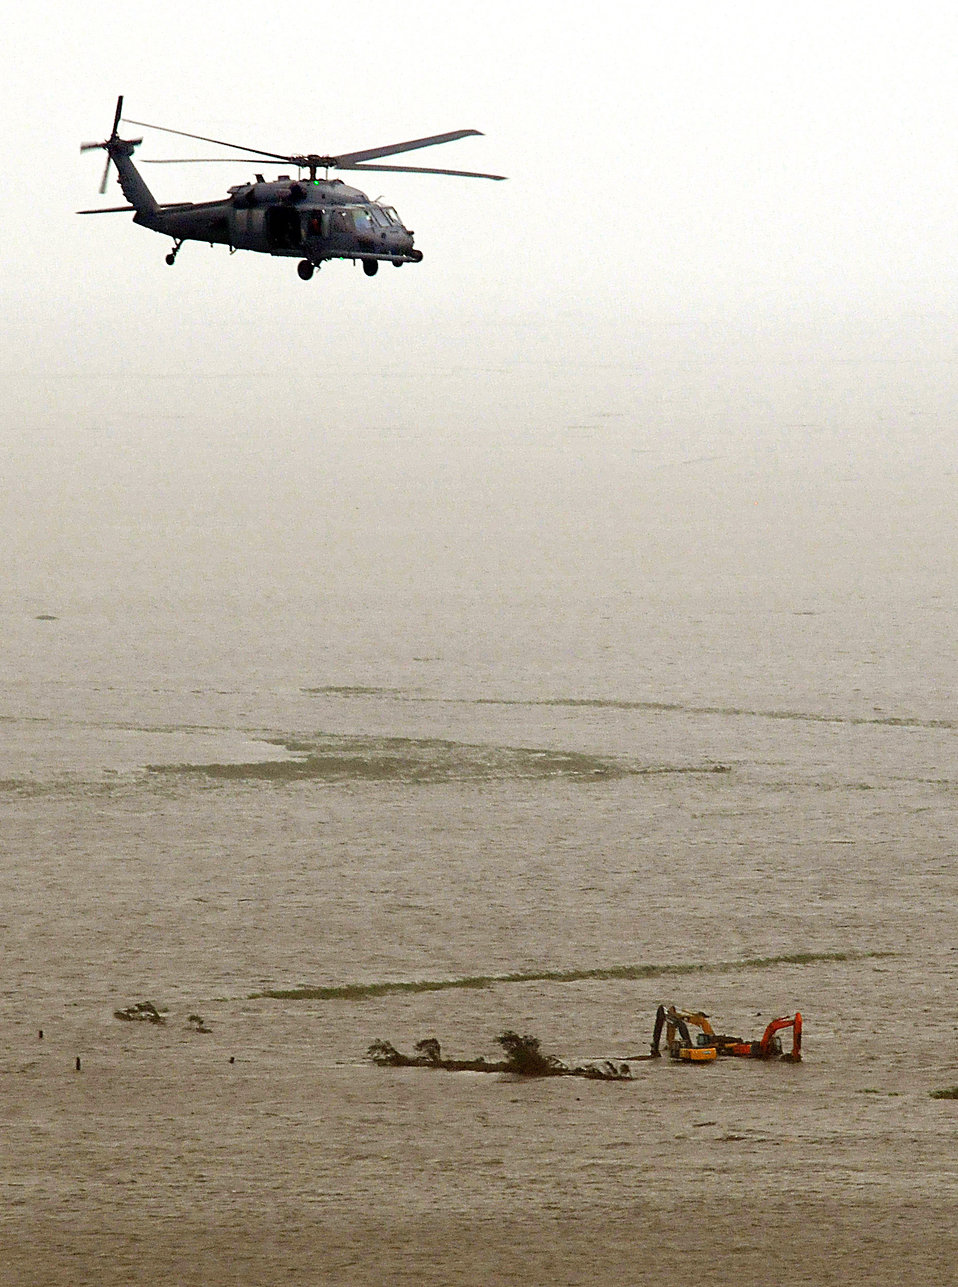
Rescue team pulls seventeen from floodwaters

An HH-60G Pave Hawk helicopter assigned to the 331st Air Expeditionary Group passes over three massive hydraulic excavators sitting in flood waters from Hurricane Ike. Deployed from the 920th Rescue Wing at Patrick Air Force Base, Fla., the pararescuemen, along with aircrews, two HH-60G Pave Hawk helicopters and two HC-130P/N refueling aircraft, rescued 17 people from the small Texas town of Nederland Sept. 13.